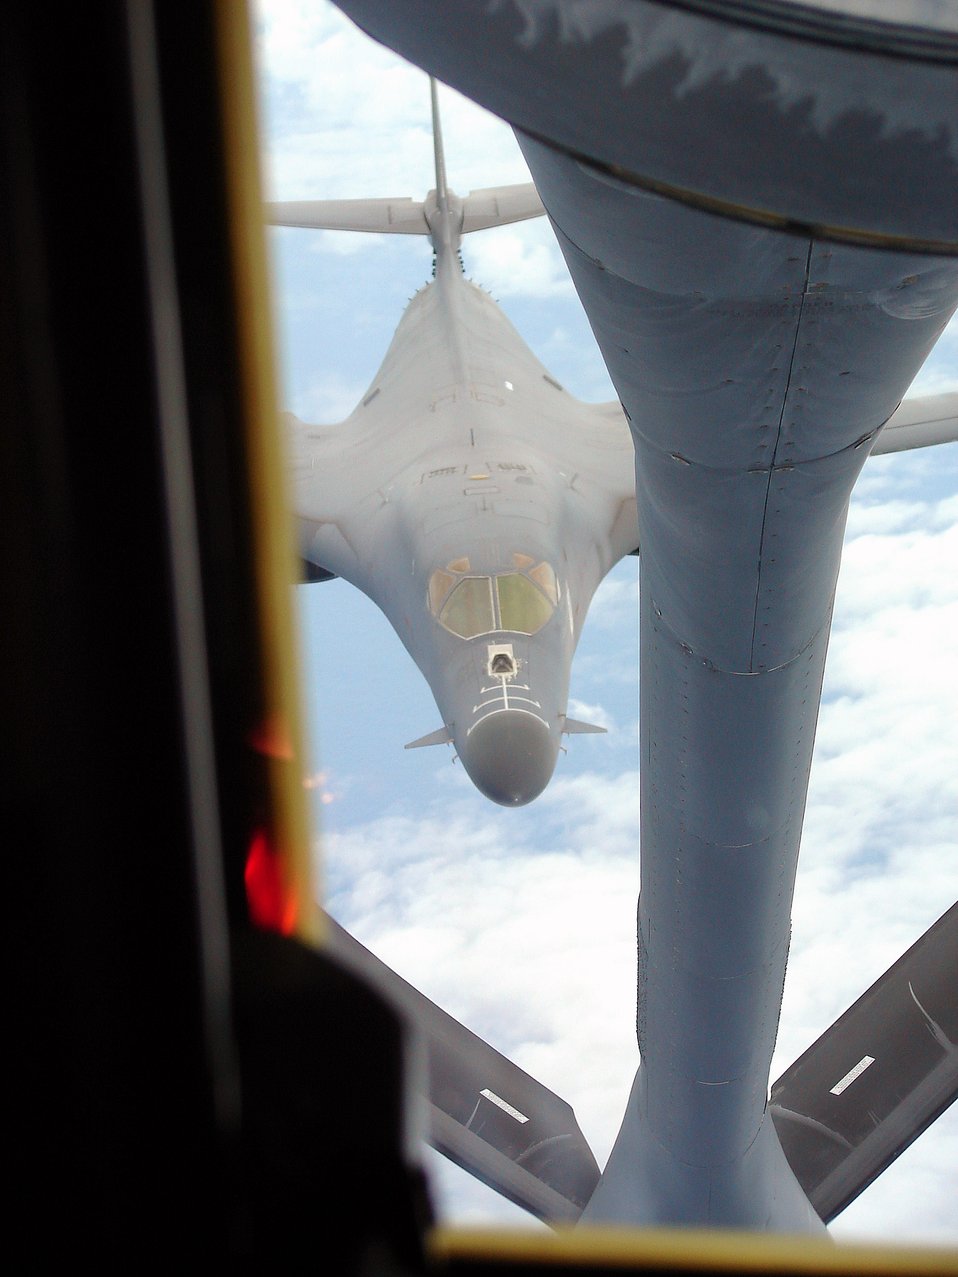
Feb. 26 airpower summary: B-1Bs destroy Taliban check point

A B-1B Lancer prepares to take on fuel from a KC-135 over Southwest Asia. Both aircraft are deployed to the 40th Air Expeditionary Group.